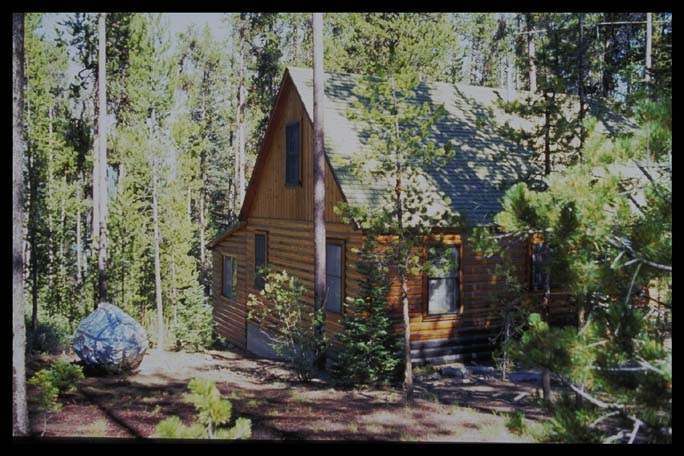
Wildland/Urban interface